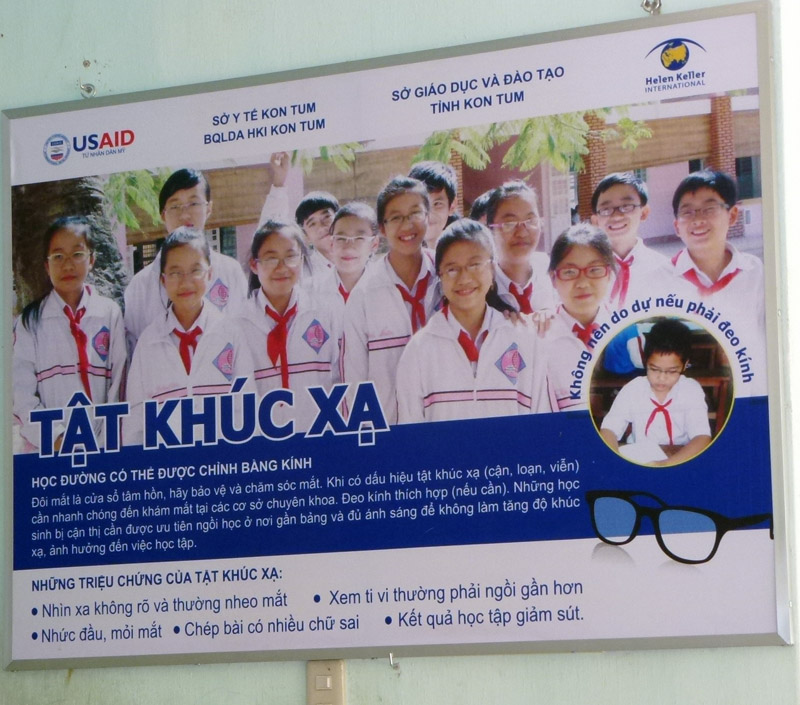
Eye screening at for students in Kon Tum, Vietnam, supported by USAID and HKI